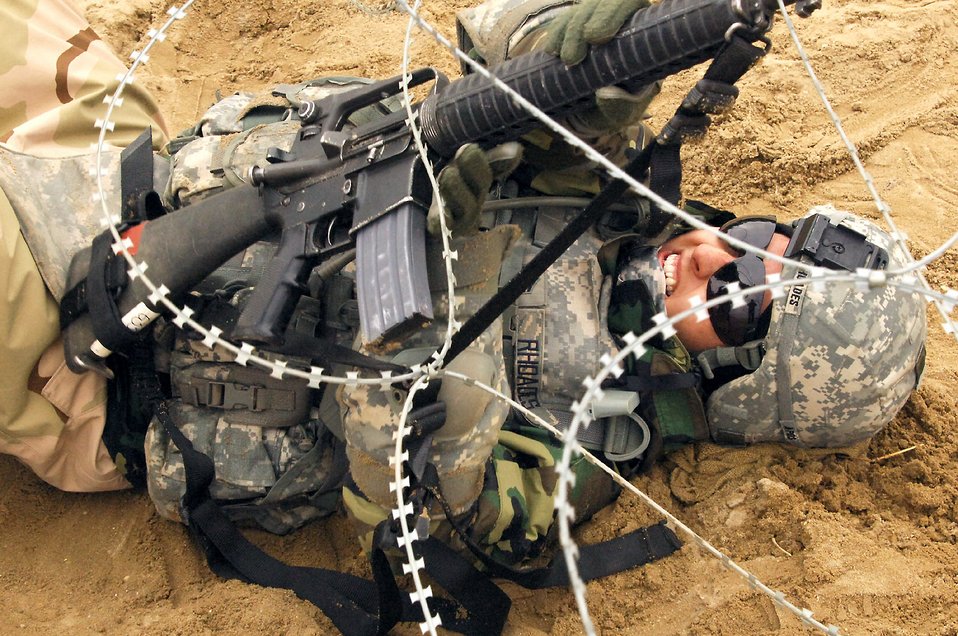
Airmen master Soldier skills training

Master Sgt. Sherri Rhoades eases her way under the concertina wire during Individual Movement Technique training at the Fort Dix, N.J., improvised explosive device range. The training teaches troops how to conduct maneuvers in an unknown, often hostile, environment. Sergeant Rhoades and her fellow Airmen, members of USAF Class 25, are completing the Soldier Skills Training Course as they prepare for various deployments around the globe. There are about 75 Airmen currently going through the month-long course.